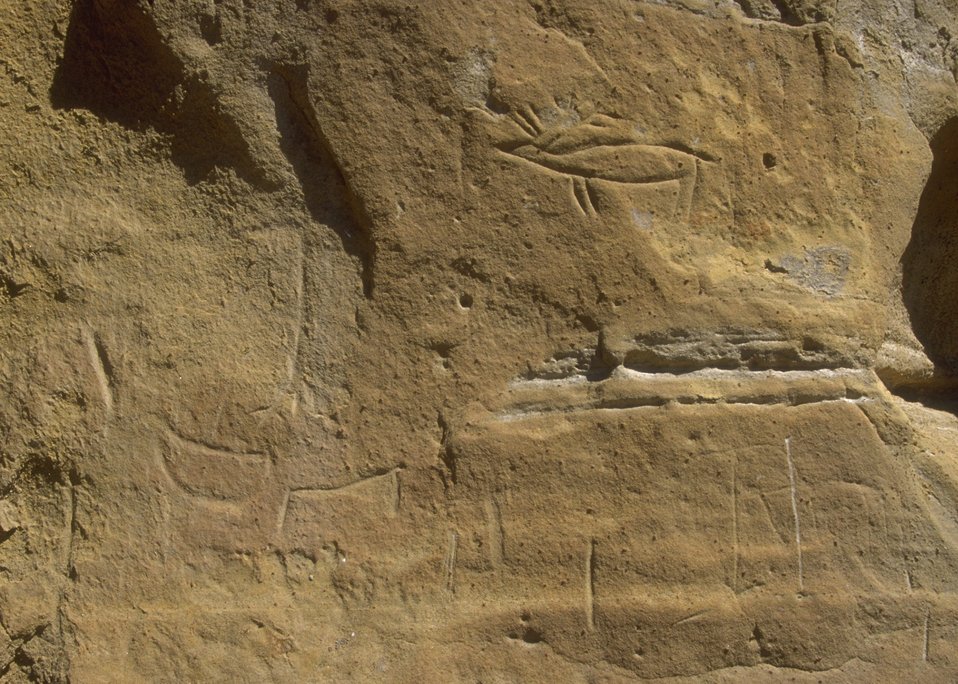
White Mountain Petroglyphs, Rock Springs Field Office.